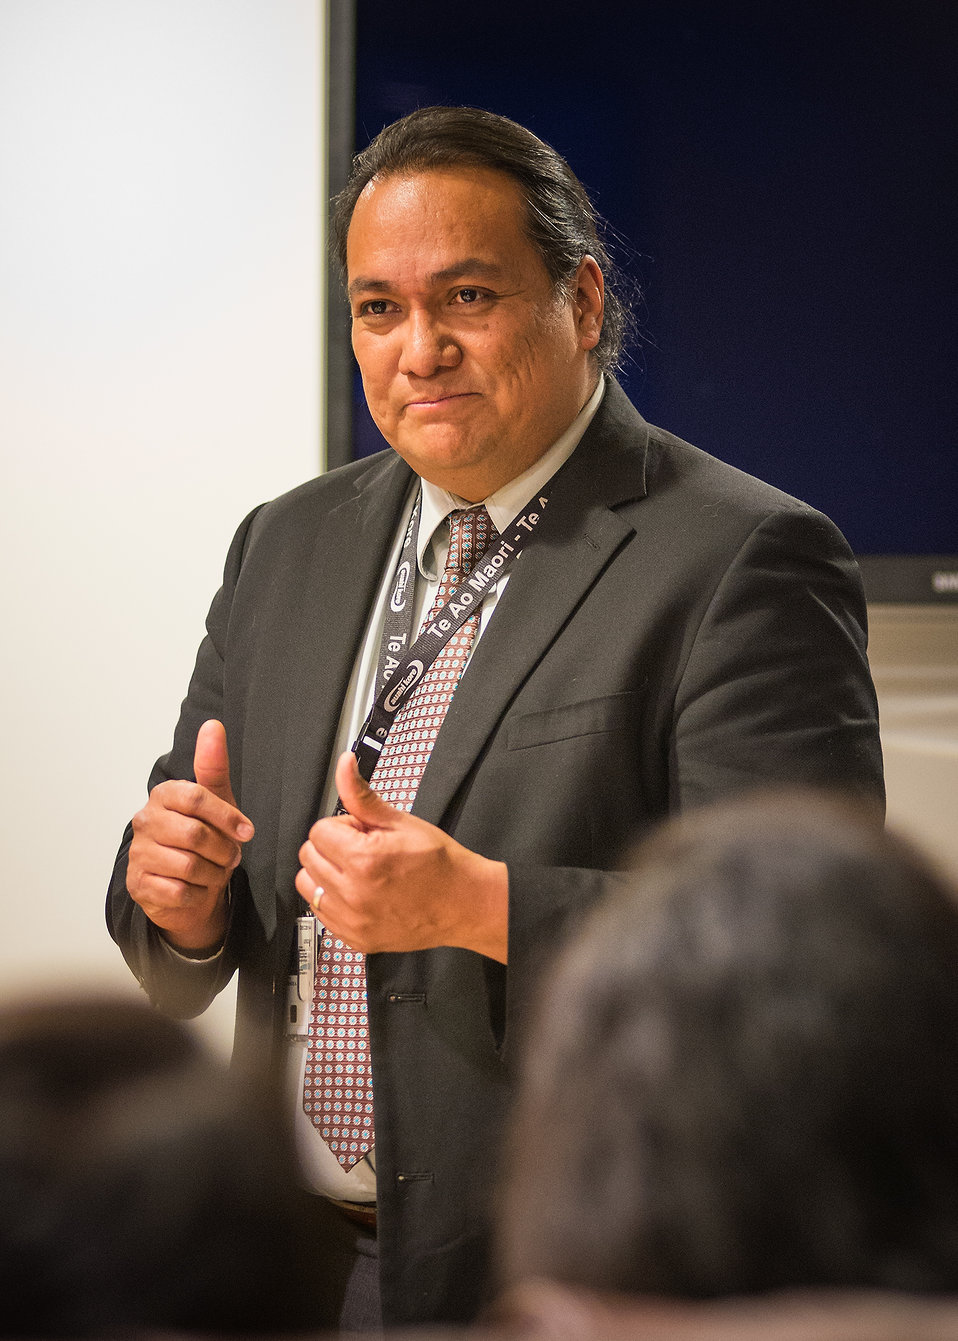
Lawrence Shorty, Director 1994 Programs Tribal Land Grant Colleges and Universities program explained to students from Thomas Jefferson High School of Science and Technology in Alexandria, VA. how to apply for student employment programs at the U.S. Department of Agriculture (USDA), Office of the Chief Information Officer (OCIO) IT Job Shadow Day, Tuesday, Mar. 25, 2014. The OCIO IT Job Shadow Day hosts students from local high schools in the Washington, D.C. area annually with IT professionals and agricultural specialists from a variety of mission areas at USDA.